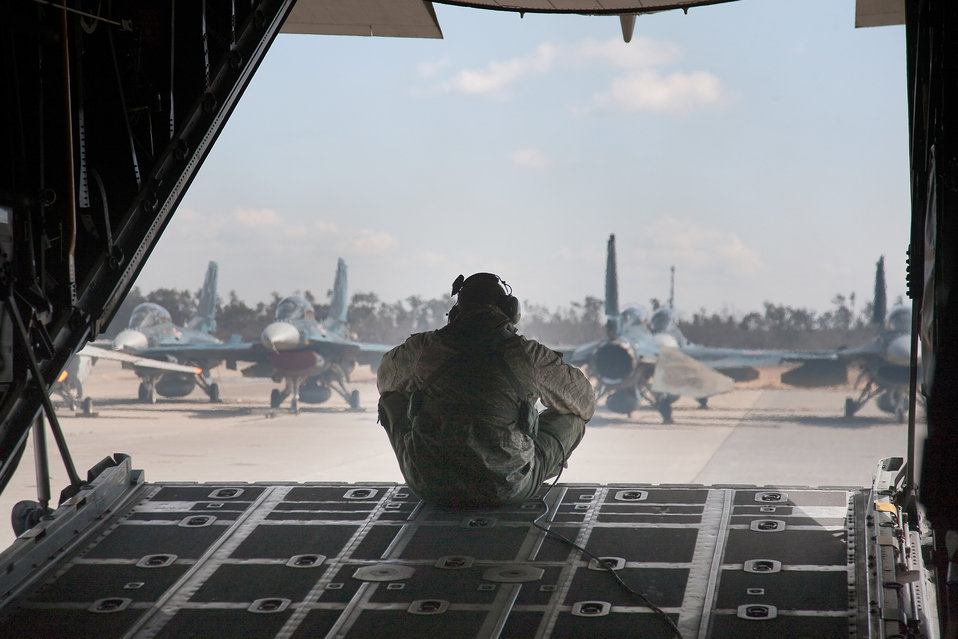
Crew conducts refueling

Senior Airman Ramon Mortensen looks at damaged F-2 aircraft after landing March 18, 2011, at Matsushima Airfield to drop off relief supplies. The aircraft were damaged after an earthquake and subsequent tsunami rocked Northeastern Japan. Airman Mortensen is a loadmaster assigned to the 17th Special Operations Squadron.